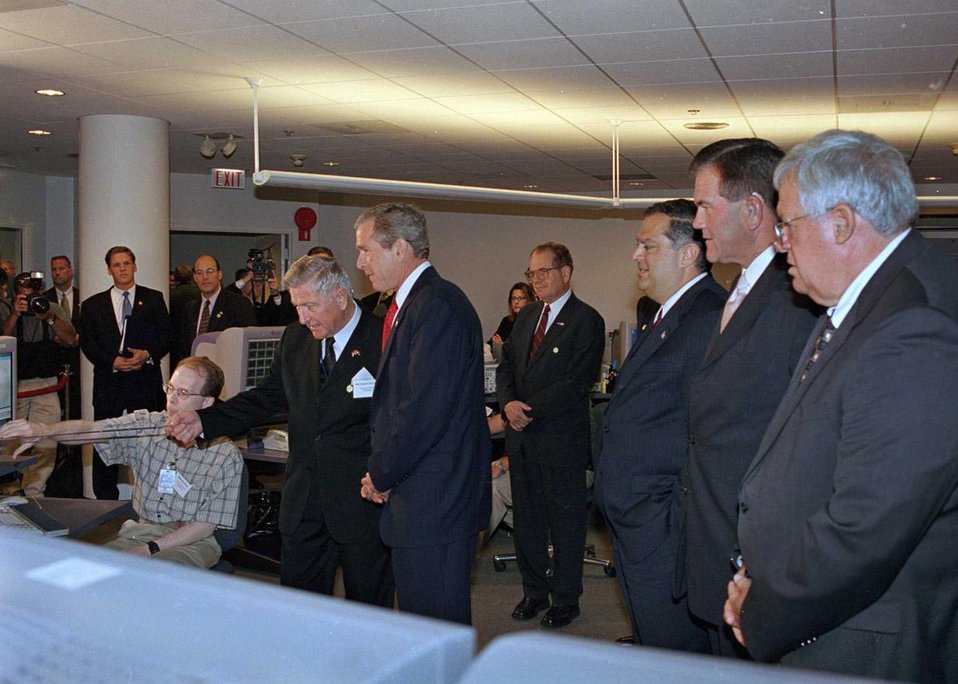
President George W. Bush receiving briefing on counter terrorism technologies at DOE's Argonne National Laboratory.

The President visited ANL on july 22, 2002 to hear the briefing conducted by Hermann Grunder, director of ANL on counter terrorism technologies developed by several doe national laboratories. With the president (left to right) are Secretary of Energy Abraham, Homeland Security Director, Thomas Ridge and House Speaker, Dennis Hastert.